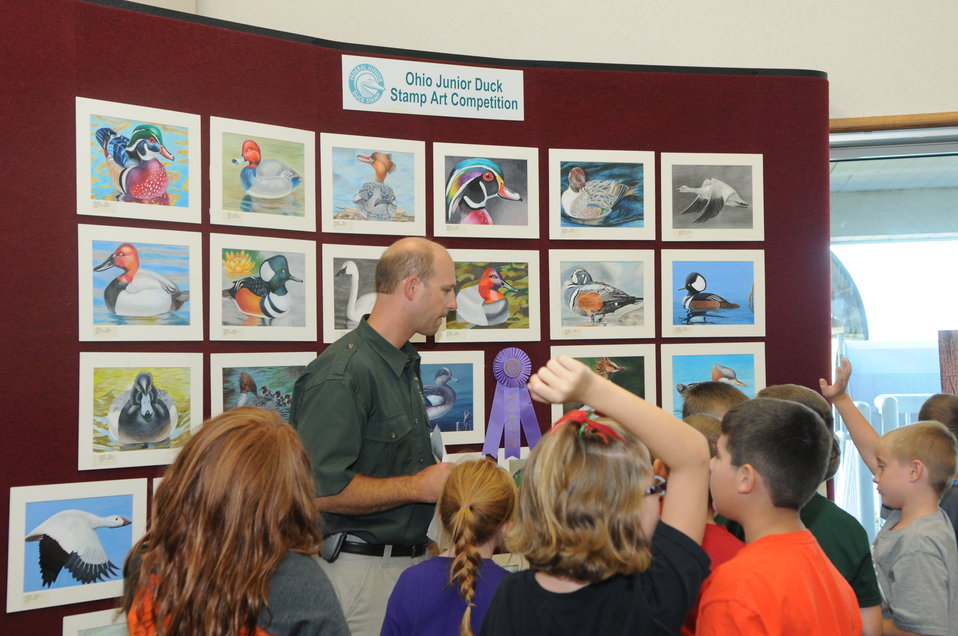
Ohio Division of Wildlife lead school group through artwork exhibit hall, which included a display of the 2013 Ohio Junior Duck Stamp artwork